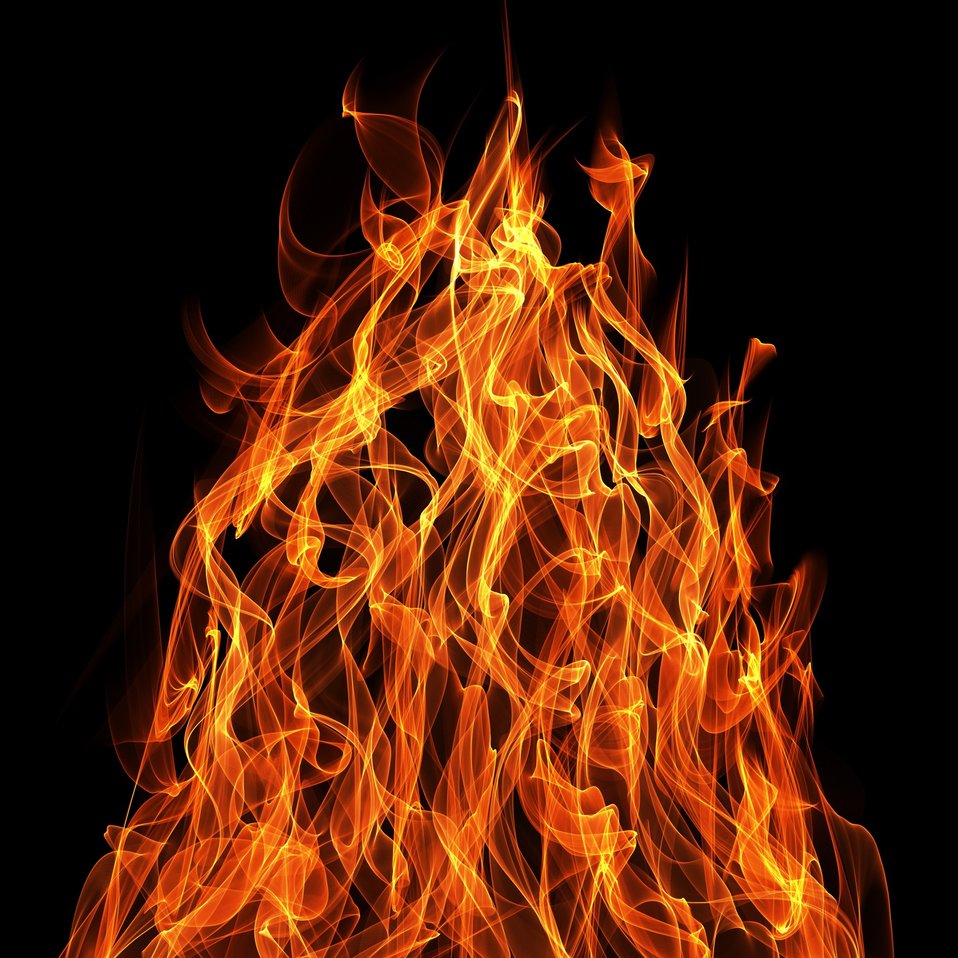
Flaming fire

Digitally created flames of fire..